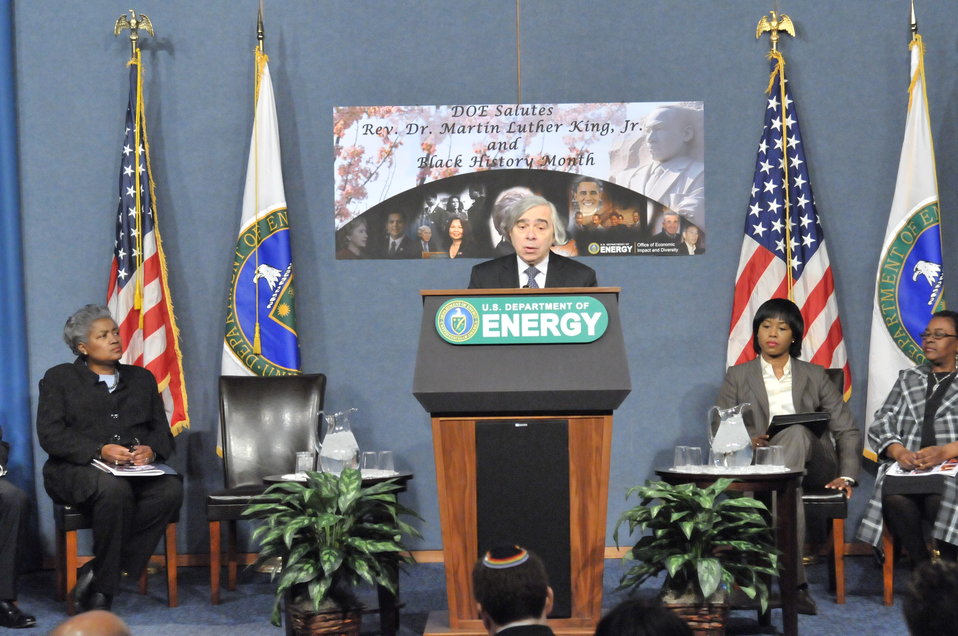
DEPARTMENT OF ENERGY -MARTIN LUTHER KING / BLACK HISTORY MONTH COMMEMORATIVE PROGRAM WITH DOE SECRETARY E. MONIZ IN ATTENDANCE